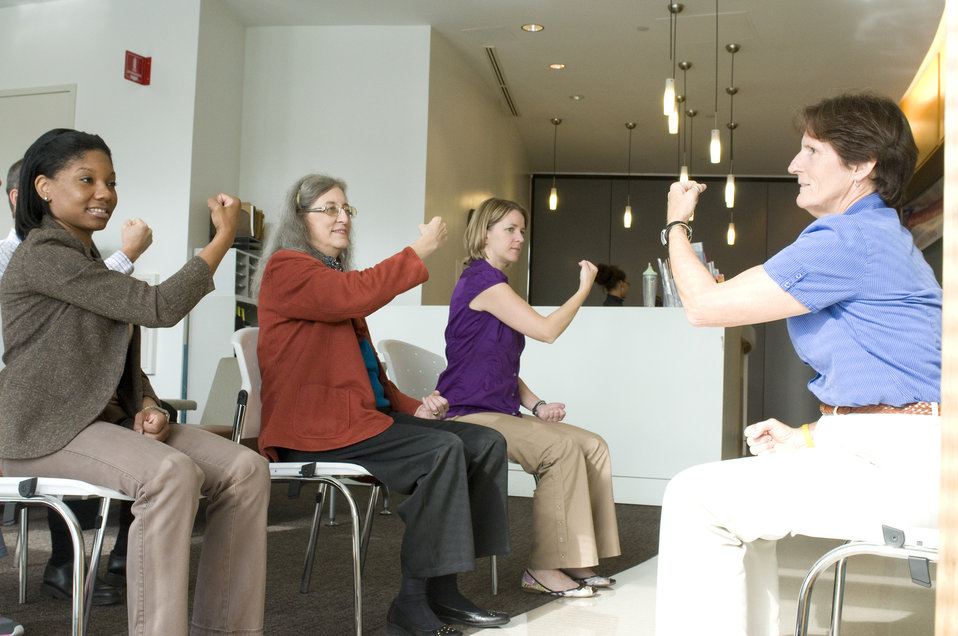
This image depicts a class in session, the purpose of which was to instruct a number of Centers for Disease Control (CDC) employees how to reduce workplace stress and exercise while seated at their desk. In this particular view, a workplace ergonomic specialist at right, was conducting a seated group of attendees at left in how to perform upper body exercises when at their workstations.